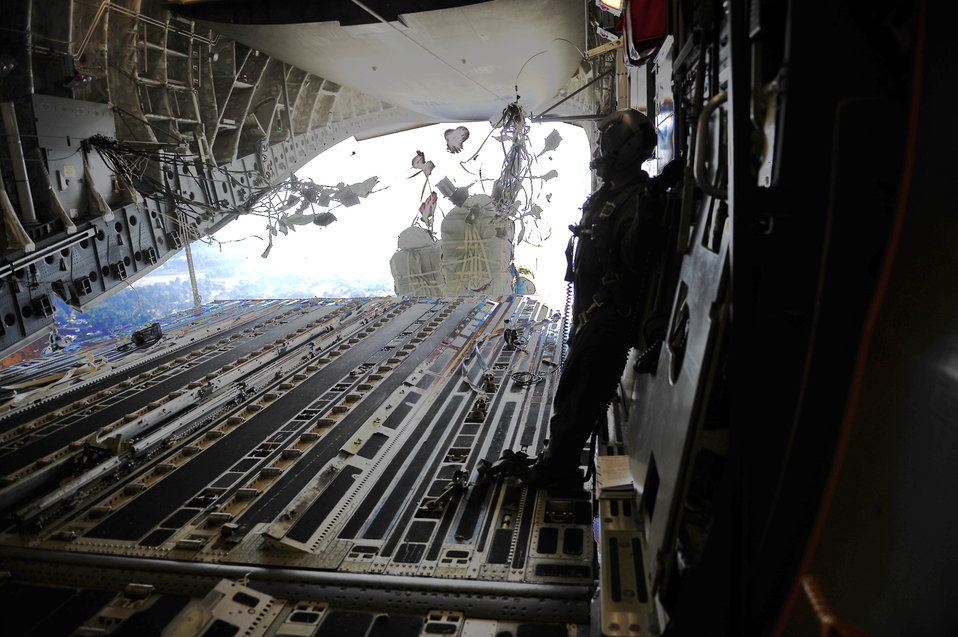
Meals, water delivered for Haiti relief

Container delivery system bundles are on the way to the delivery zone from a C-17 Globemaster III assigned to the 437th Airlift Wing at Charleston Air Force Base, S.C., over Haiti in support of Operation Unified Response Jan. 21, 2010. The aircrew, assigned to the 15th Airlift Squadron at Charleston AFB, S.C., delivered 40 container delivery system bundles totaling 67,800 pounds of Meals, Ready to Eat and bottled water.